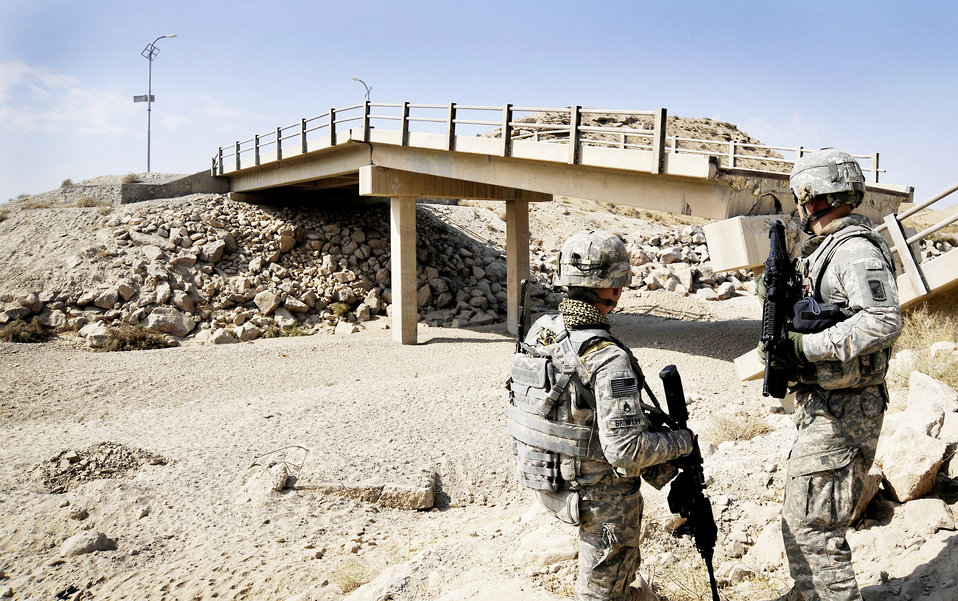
Air Force engineers help keep Afghan roads safe for travel

Army Sgt. William Brinkley and Capt. Rick Vermillion speak about a bridge that has received damage from an improvised explosive devices Oct. 23, 2009, in Zabul Province, Afghanistan. The inspections increase safety for the people of Zabul as well as coalition forces while traveling. Sergeant Brinkley is a security forces Soldier assigned to the Provincial Reconstruction Team Zabul, and Captain Vermilion is a PRT engineer.